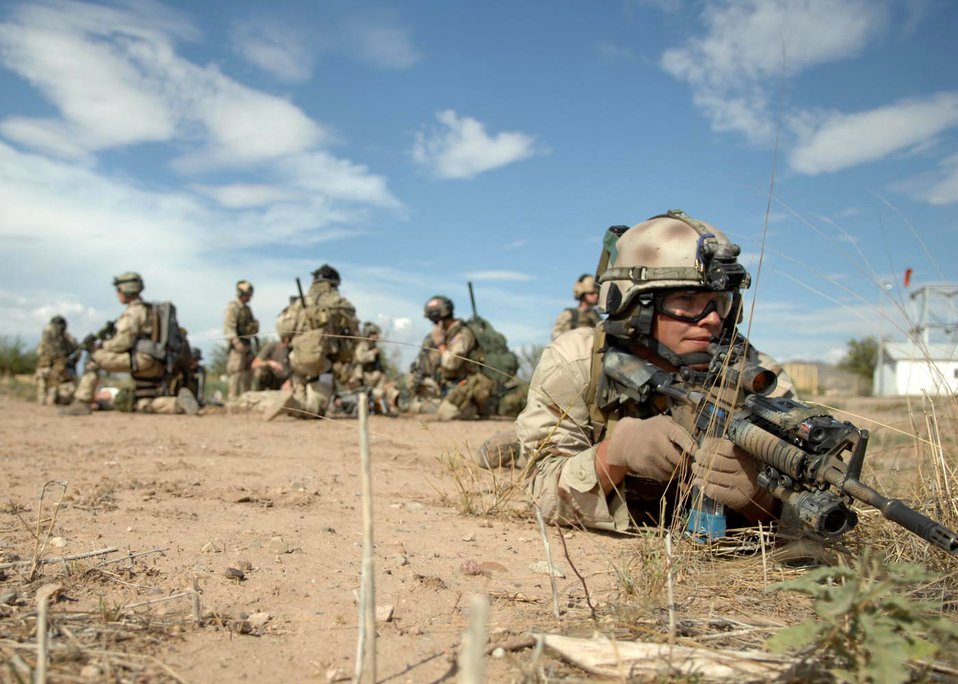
Angel Thunder 2007

Senior Airman David Covel maintains security during a training scenario July 13 at Playas, N.M., that is part of Exercise Angel Thunder 2007. Angel Thunder is a combat search and rescue task force exercise designed to test theater spin-up capabilities and examine the integration of all Air Force assets in mission planning procedures and mission execution. Airman Covel is a pararescueman from the 58th Rescue Squadron at Nellis Air Force Base, Nev.